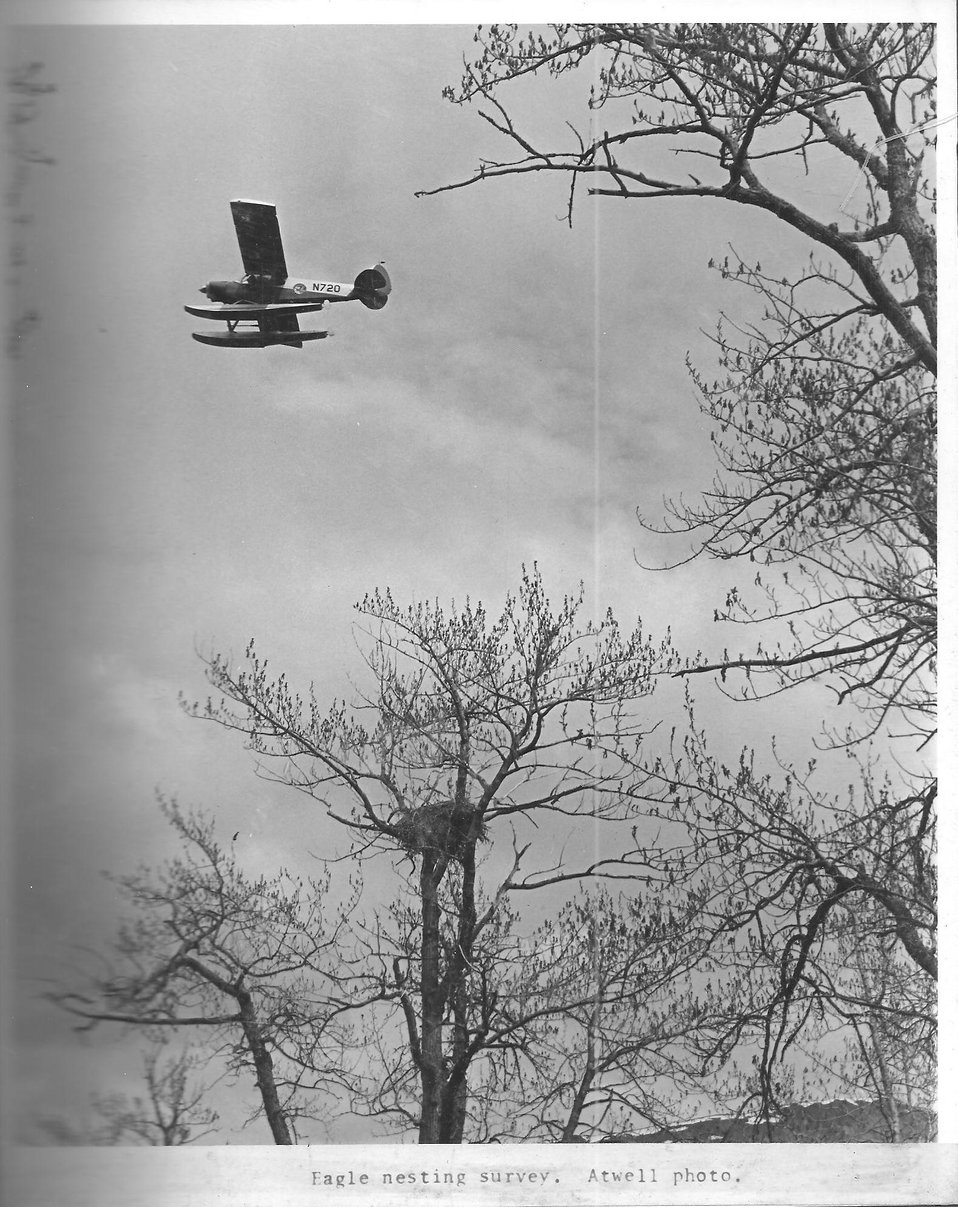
(1972) Eagle Nest Fly-By

Credit: USFWS

Source and Contact: Kodiak National Wildlife Refuge